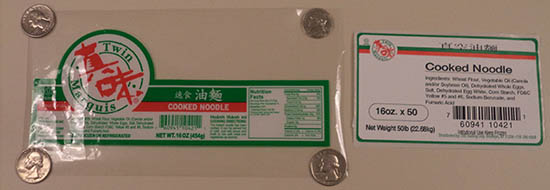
RECALLED – Cooked Noodle and Lo Mein Noodle

March 03, 2014 – Product Recall – Twin Marquis, Inc Issues Allergy Alert on Undeclared Milk in Specific Lots of its Cooked Noodle and Lo Mein Noodle.